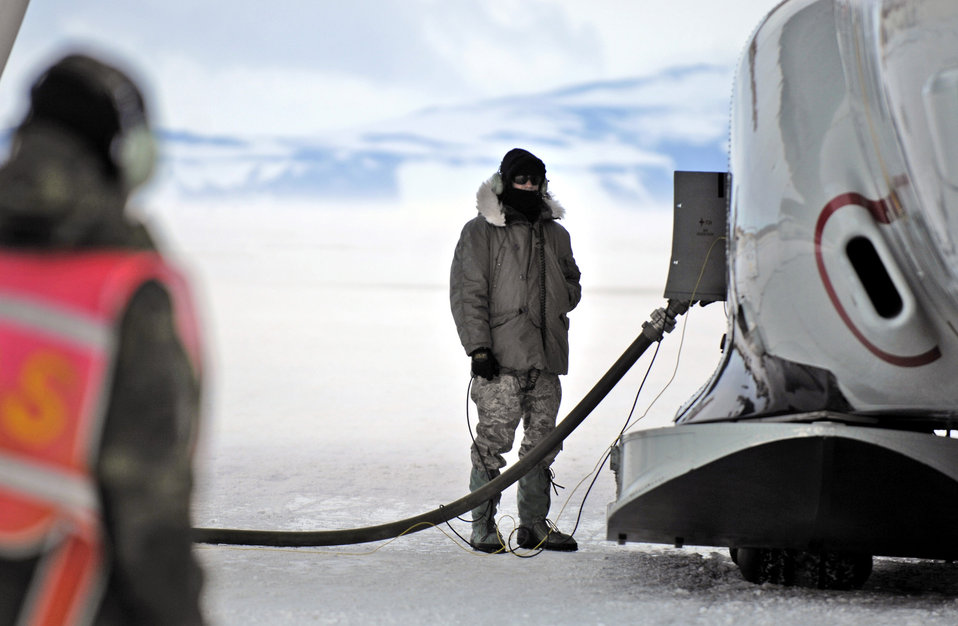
Ice, ice baby!

Staff Sgt. David Aymat and Tech. Sgt. Kevin Call refuel an LC-130 Hercules Nov. 26 on the annual sea ice runway near McMurdo Station, Antarctica, during Operation Deep Freeze. Ski-equipped LC-130s, crews and support personnel from the New York Air National Guard's 109th Airlift Wing are supporting the 13th Air Force-led Joint Task Force Support Forces Antarctica, Operation Deep Freeze. Operation Deep Freeze is a unique joint and total force mission that has supported the National Science Foundation and U.S. Antarctic Program that began in 1955.